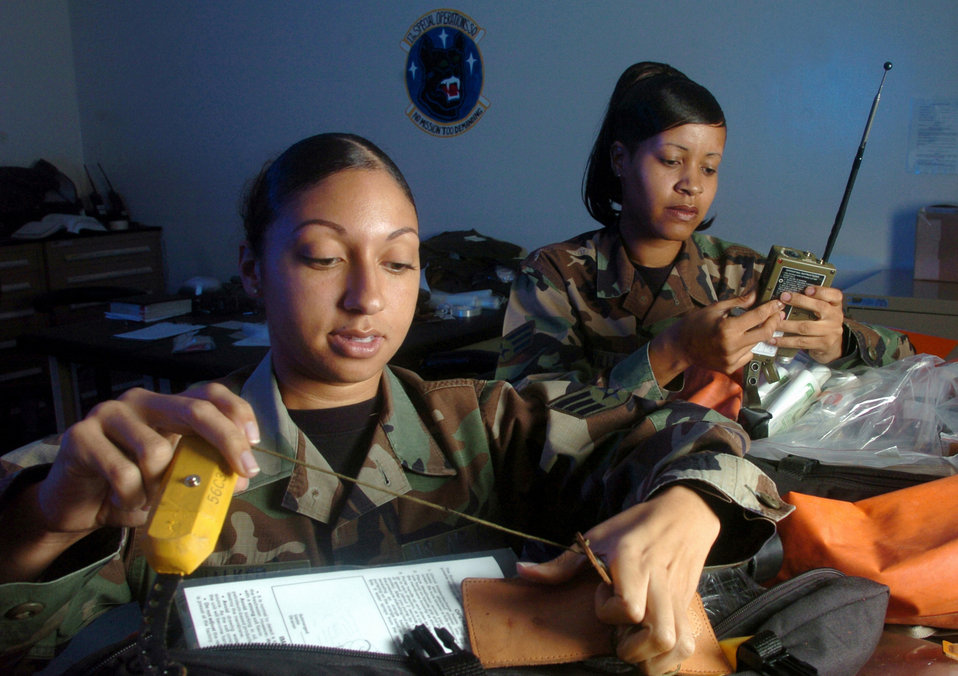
Life-support Airmen offer keys to survival

KADENA AIR BASE, Japan -- Senior Airmen Brandy Walker (left) and Patrina Fonville examine survival equipment from a 20-person life raft kit. Some of the components include sea dye markers, radios, flares, seawater desalinators and a medical first-aid kit. They are life-support technicians with the 17th Special Operations Squadron here.